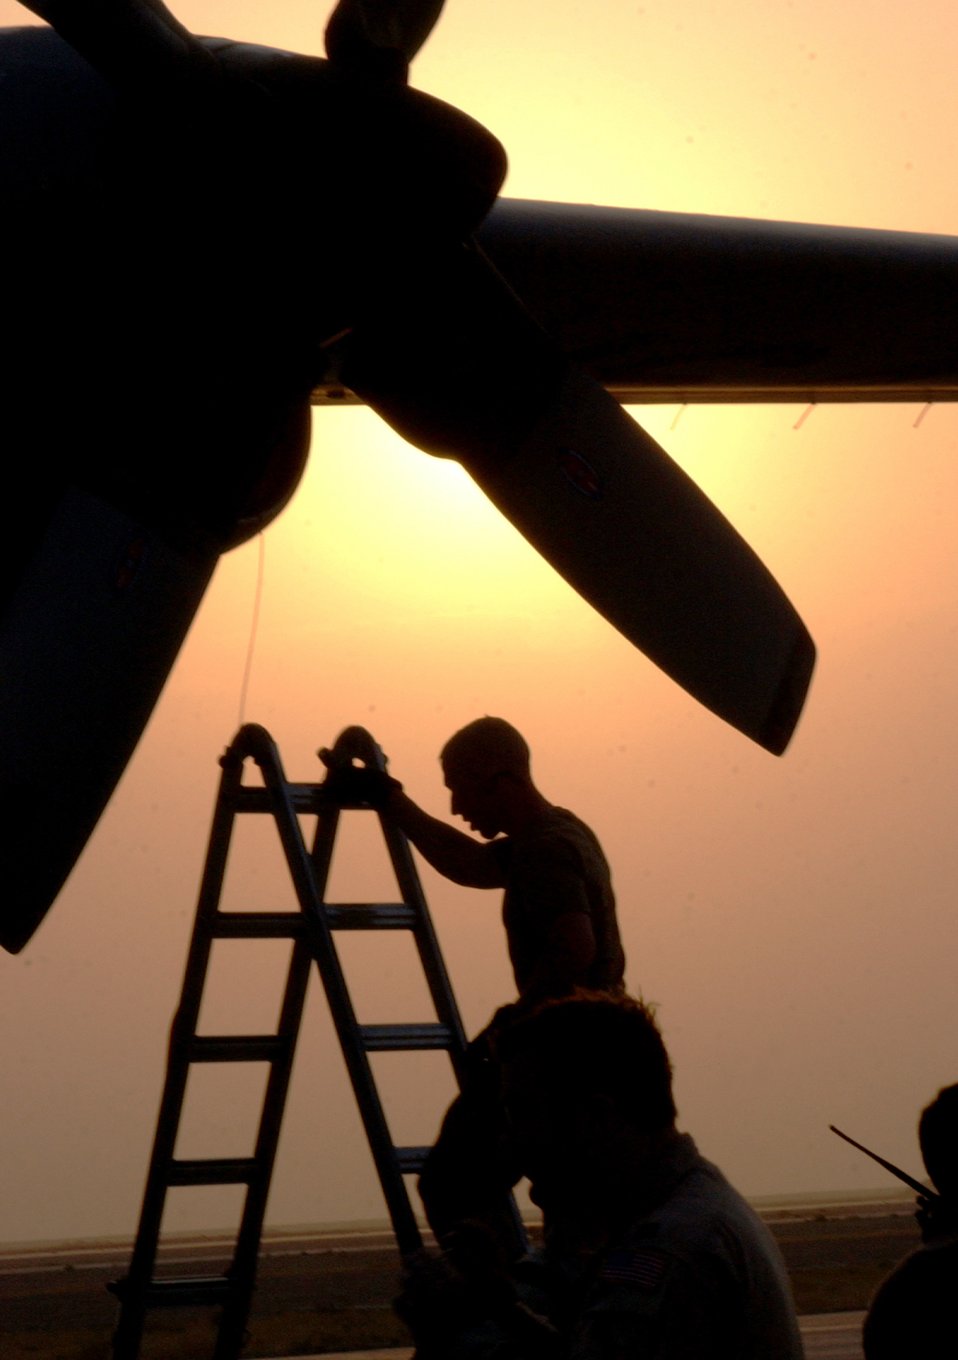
Operation Iraqi Freedom

ALI BASE, Iraq -- The sun sets behind Staff Sgt. Bud Sommerville and his C-130 Hercules on the on the aircraft ramp here. Sergeant Sommerville -- of the 777th Expeditionary Airlift Squadron -- went up the step ladder Oct. 18 to install an inlet plug in the transport's engine housing. This base's 407th Air Expeditionary Group operates C-130 Hercules and trains more than 100 Iraqi Airmen on how to maintain and fly the cargo airplanes.